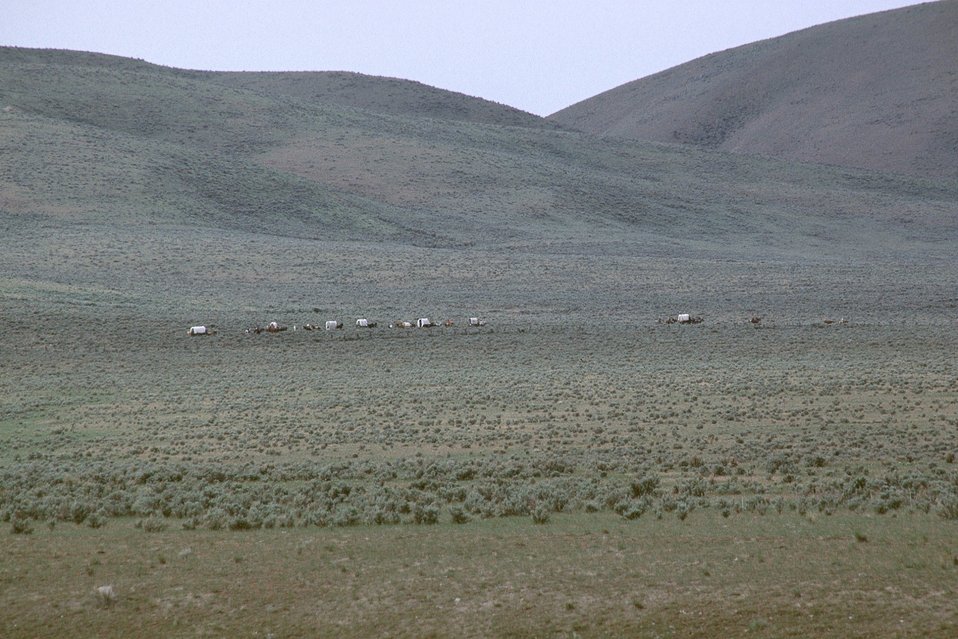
NHOTIC 10th Anniversary, wagon train reenactment. Far shot of covered wagons on the Oregon Trail.